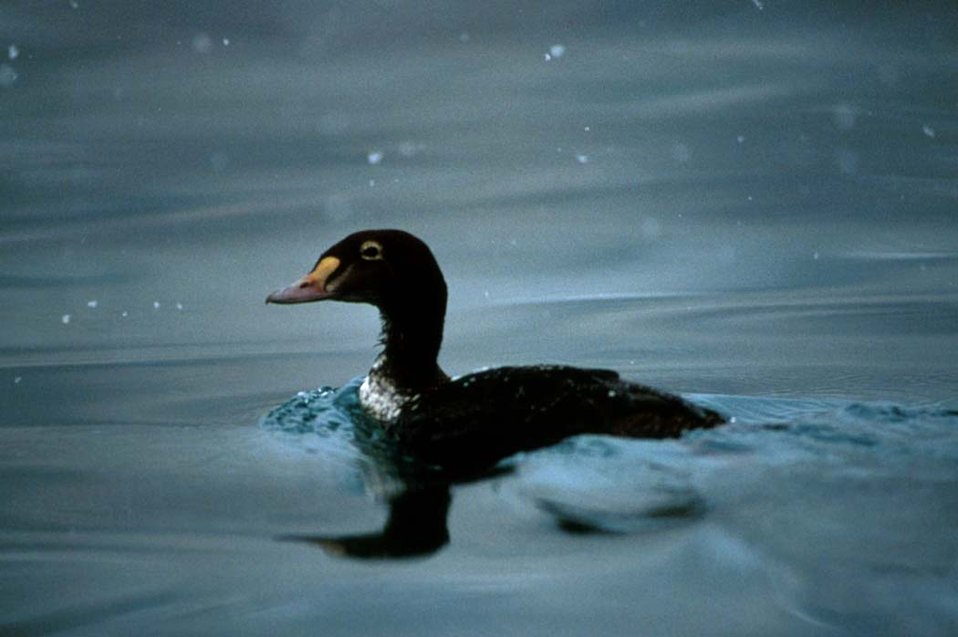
Black scoter swims in water.